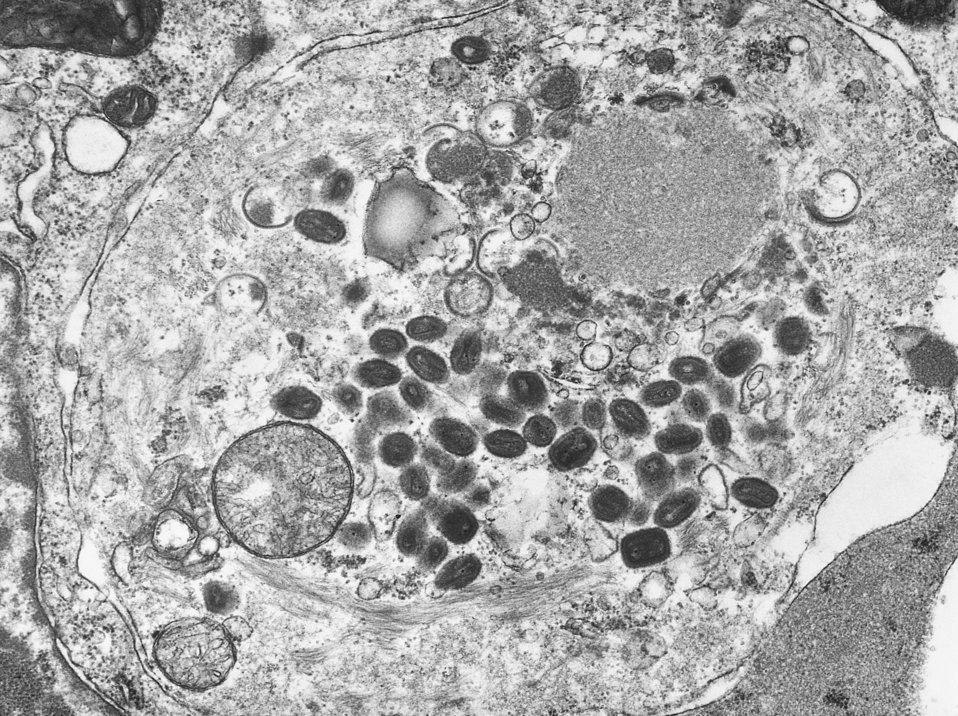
A transmission electron micrograph of a tissue section containing variola viruses.